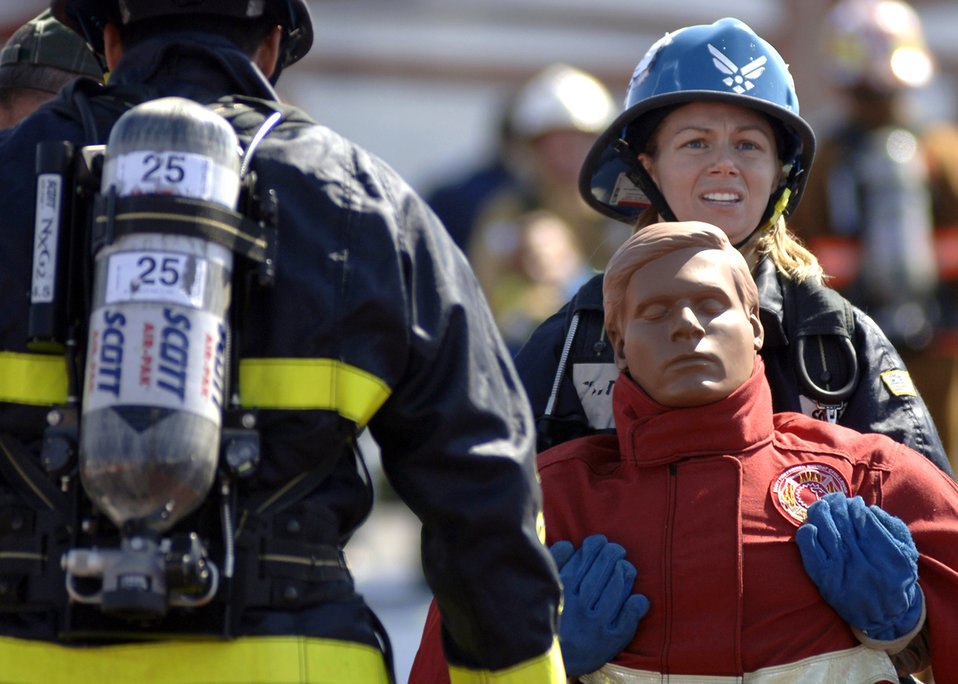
Tandem Carry

Shenah Groom, Team Travis, carries a 175-pound dummy to the finish line of the tandem portion of the Firefighter Combat Competition at Morrow, Ga., Oct. 13, 2006. The competition is a national competition with over 450 firefighters from around the U.S.